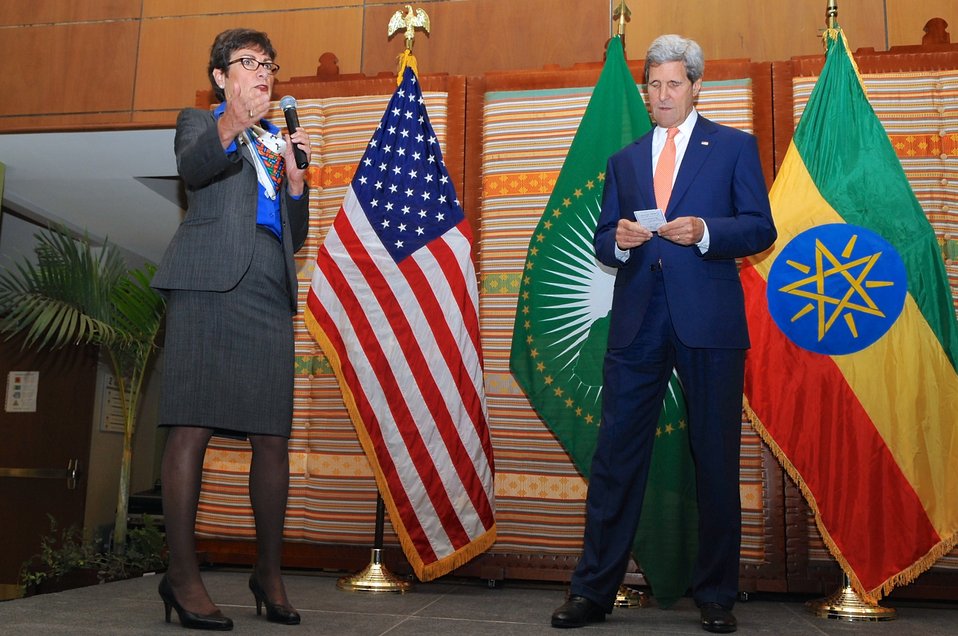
Ambassador Haslach Introduces Secretary Kerry to Embassy Addis Ababa Staff

U.S. Ambassador to Ethiopia Patricia Haslach introduces U.S. Secretary of State John Kerry before he holds a meet-and-greet with the staff of Embassy Addis Ababa and the U.S. delegation to the African Union on May 1, 2014.